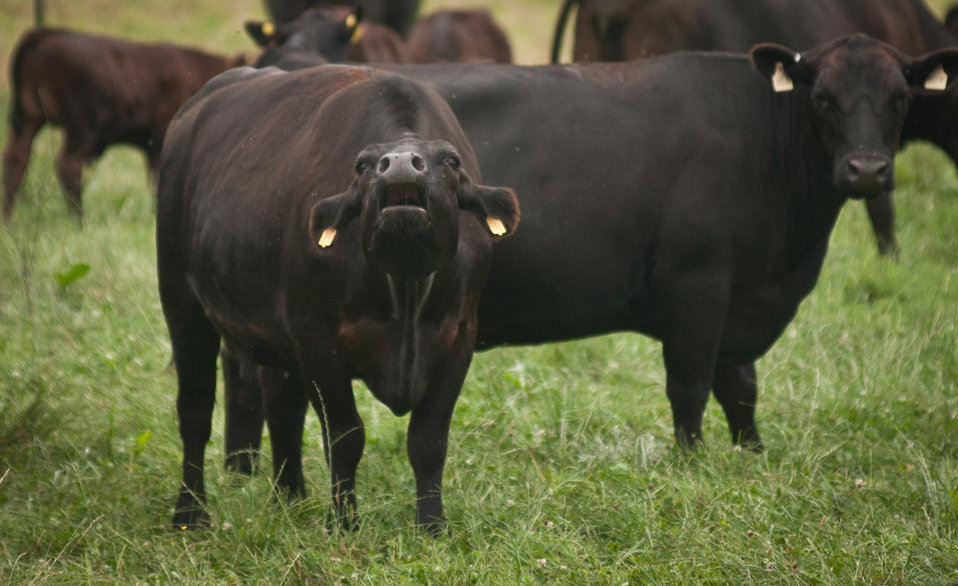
Black Angus cows and calves graze organic pastures, and for added nutrition and variety, they enjoy a daily feeding of sweet silage at Nick’s Organic Farm, owned by Nick Maravell, in Adamstown, MD on Friday, July 12, 2013. The white plastic wrapped bales of pasture grass and alfalfa have been fermenting for months to create sweet silage that stores well and can be used to feed cattle at varying amount all year long. The fermentation process sweetens the taste and increases the vitamin levels. The farm produces Black Angus beef, chicken, turkey, eggs, hay, soybeans, corn, alfalfa, orchard grass, rye; and other crops. The cattle are 100% grass-fed receiving certified organic pasture, certified organic hay (in winter), water and mineral salts mixed with sea kelp. The cattle are not fed hormones, antibiotics or animal products. Poultry feed from grain is ground from organic grain. The poultry also graze on organic pastures. The farm has conducted on-farm research with federal, state and non-profit agencies to refine organic practices. An organization such as the U.S. Department of Agriculture (USDA) Agricultural Research Service (ARS) center in Beltsville has been able to conduct research to improve organic crops and to breed and manage the cattle so that they have.